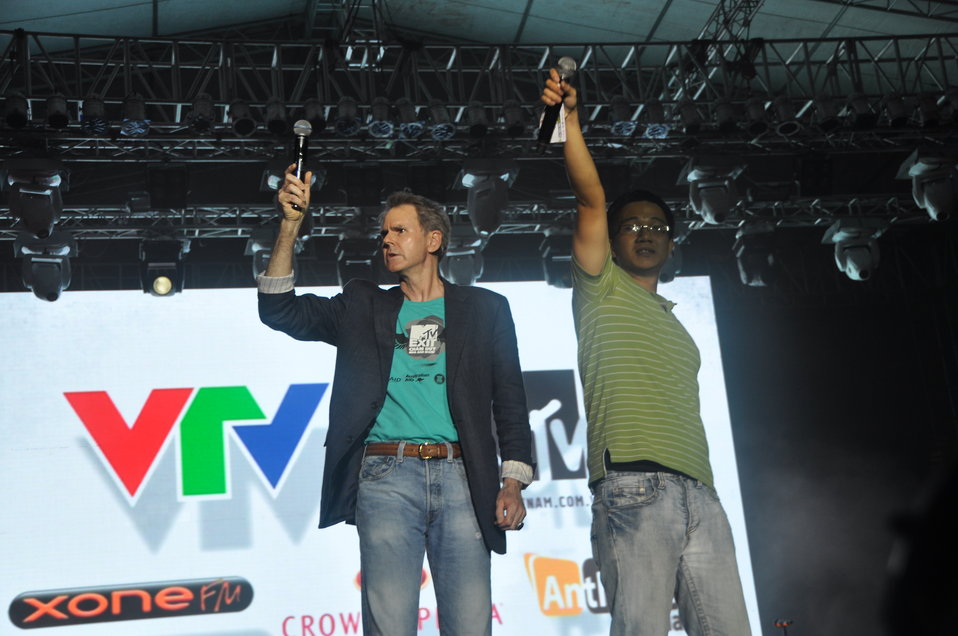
U.S. Ambassador to ASEAN, David L. Carden, challenges youth to 'stay angry and stay young' by fighting human trafficking

USAID co-sponsors MTV EXIT concert, campaign against human trafficking